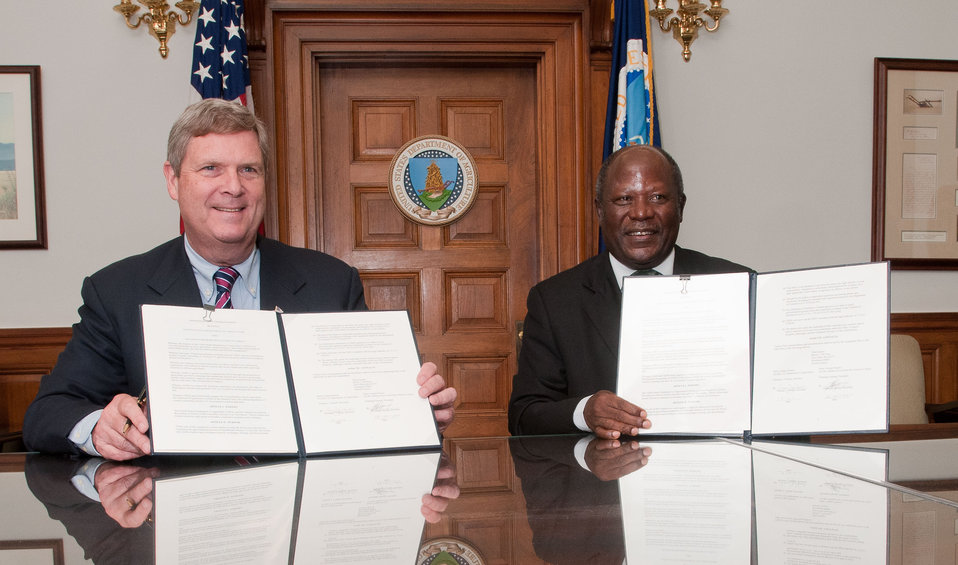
U.S. Department of Agriculture Secretary Tom Vilsack (left) and Alliance for a Green Revolution in Africa (AGRA) President Dr. Namanga Ngongi (right) sign a Memorandum of Understanding in Secretary Vilsack’s office in Washington, DC, on Thursday, May 26, 2011. AGRA’s programs integrate seeds, soils, market access, policy and partnerships and innovative finance. The alliance strives for comprehensive changes across Africa’s agricultural system. Programs also support agricultural education and water management, and the involvement and training of youth.